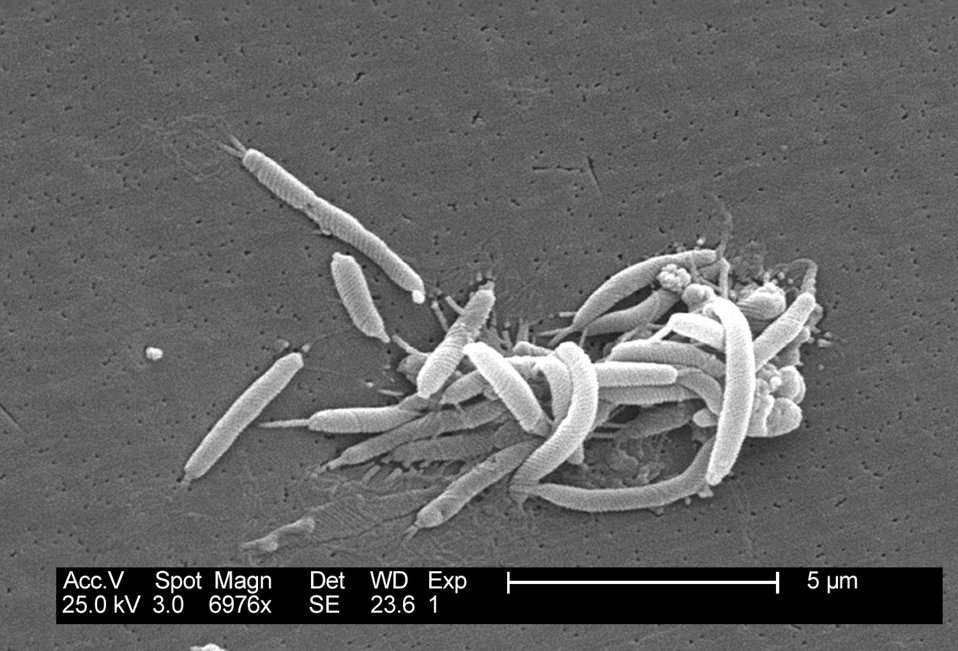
This scanning electron micrograph depicts a grouping of Gram-negative Flexispira rappini bacteria, magnified 6,976x.